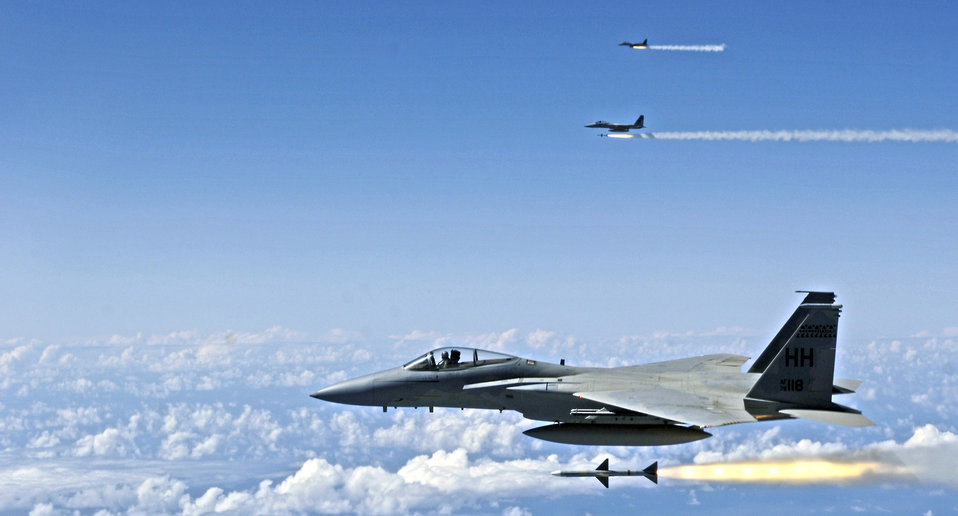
Total force at work in RIMPAC

F-15 Eagles fire AIM-7 Sparrow missiles at a tactical air-launched decoy off the coast of Hawaii on July 16 during the Rim of the Pacific Exercise 2006. The F-15s are from the Hawaii Air National Guard's 199th Fighter Squadron.